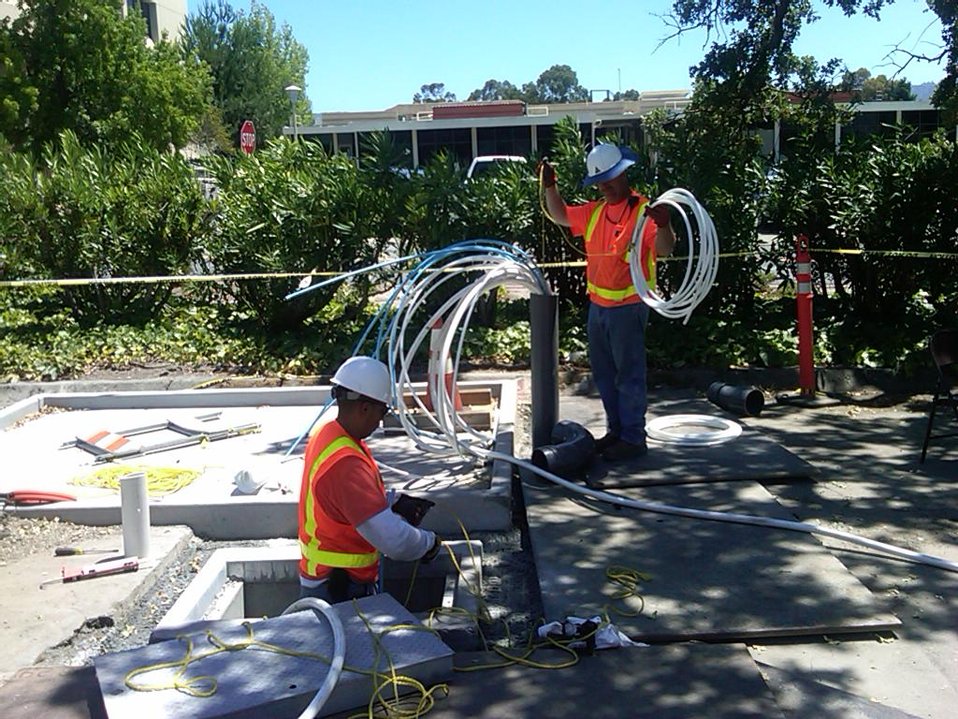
Recovery Act Supports Soil and Debris Cleanup, Groundwater Treatment at SLAC

Recovery Act workers are on track to remove more than 30,000 cubic yards of contaminated soil and debris at the SLAC National Accelerator Laboratory by September 2011.
The Recovery Act invested $14.3 million in legacy cleanup activities at SLAC. In addition to removing contaminated soil and debris that is shipped to local disposal facilities, Recovery Act workers installed three new groundwater treatment systems.